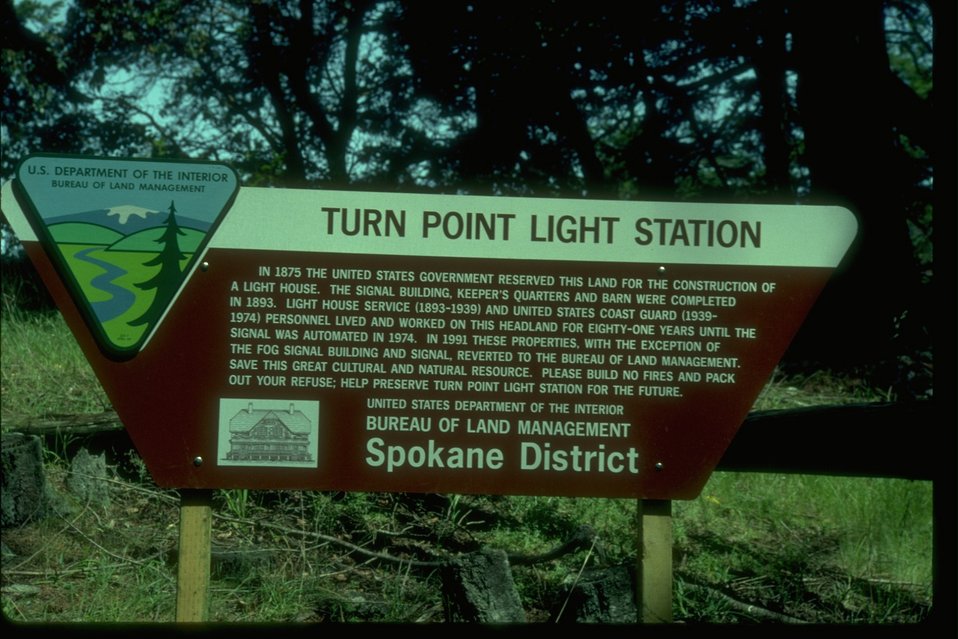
Interpretive sign at Turn Point in San Juan County, Washington.